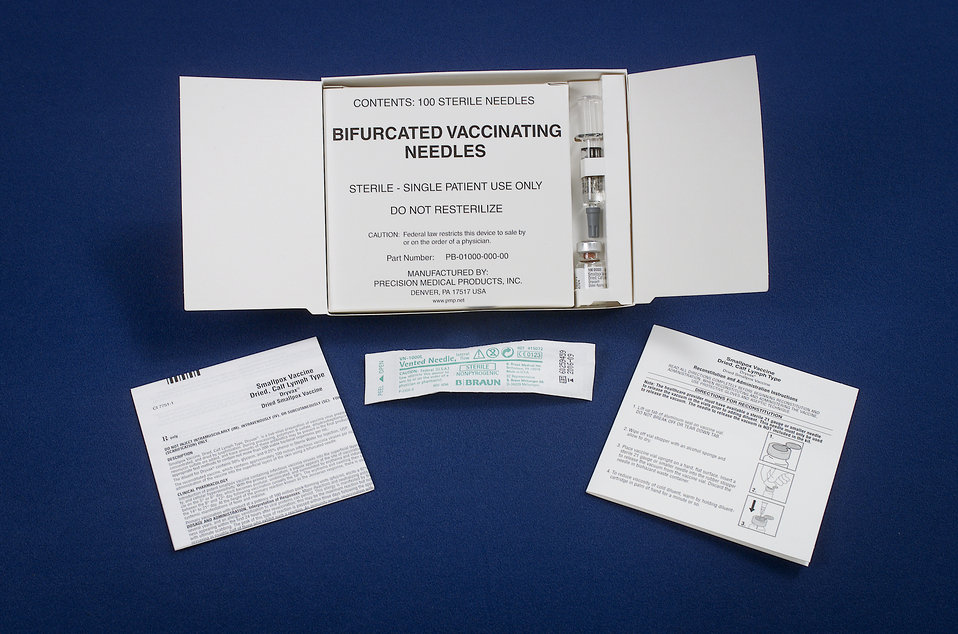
A box containing the diluent and a vial of Dryvax� dried calf lymph type smallpox vaccine, and a bifurcated needle.